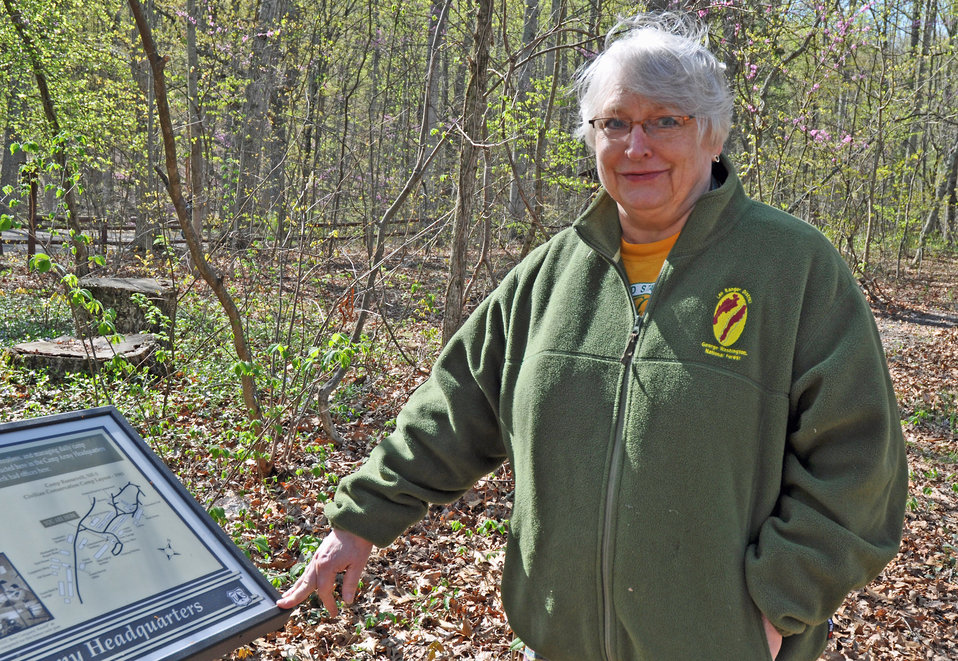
CCC1-a

Civilian Conservation Corps (CCC) legacy president Joan Sharpe points to one of the old interpretative signs that displays the site where the first CCC camp, Camp Roosevelt, was established in April 17, 1933 at the George Washington and Jefferson National Forest in Virginia on Apr. 19, 2013. Forest Service photo byTiffany Holloway.